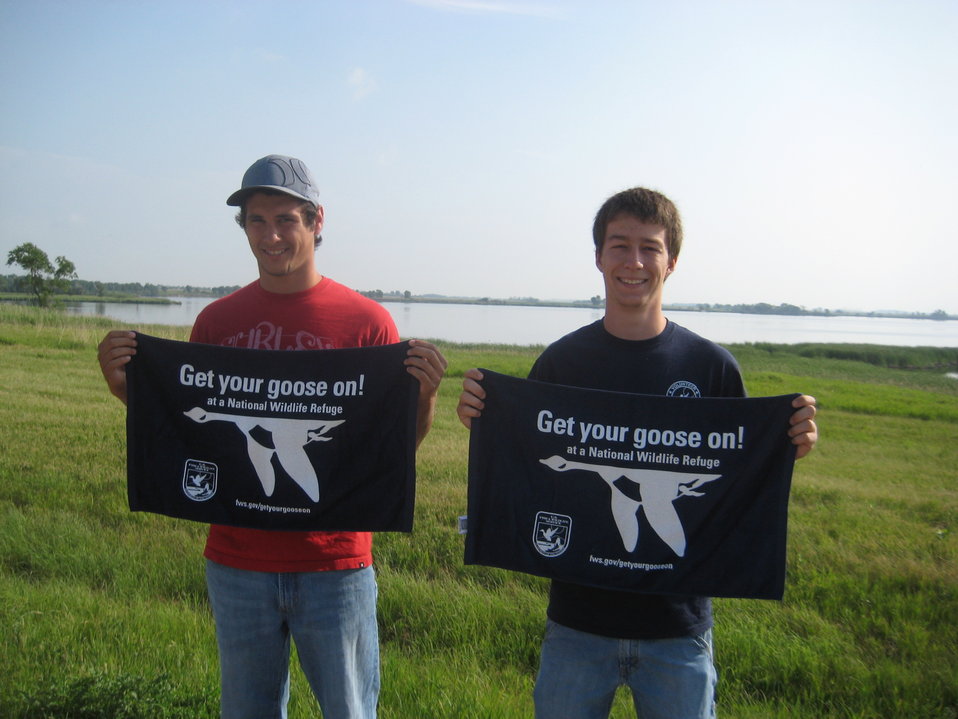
Get Your Goose On!

Taken at Tewaukon National Wildlife Refuge.